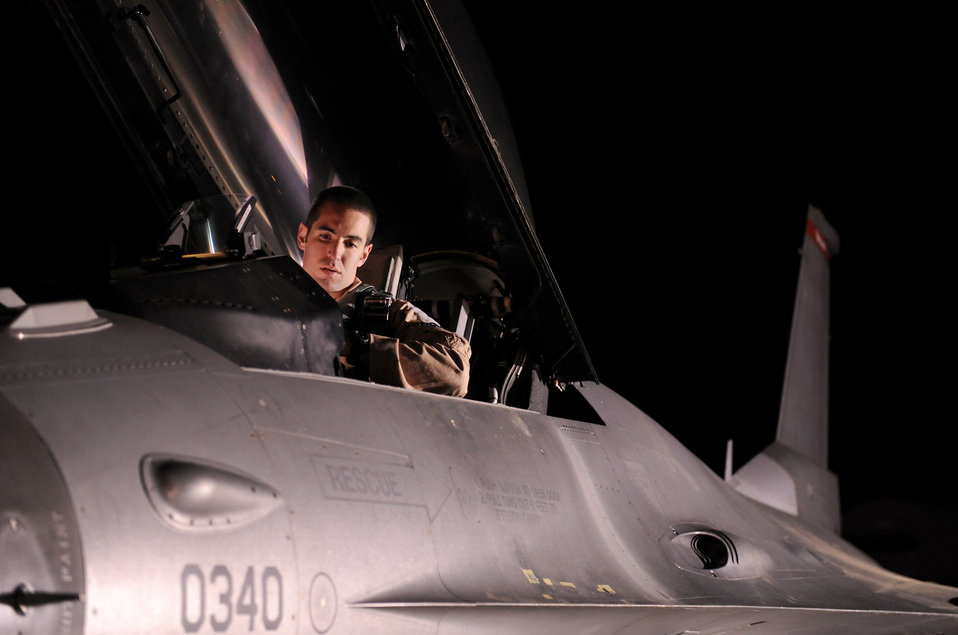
Falcons in Southwest Asia

Capt. Brett Stevens performs a preflight check May 2, 2011 from Spangdahlem Air Base, Germany for the unit's Air Expeditionary Force deployment. Captain Stevens is an F-16 Fighting Falcon pilot assigned to the 480th Fighter Squadron.